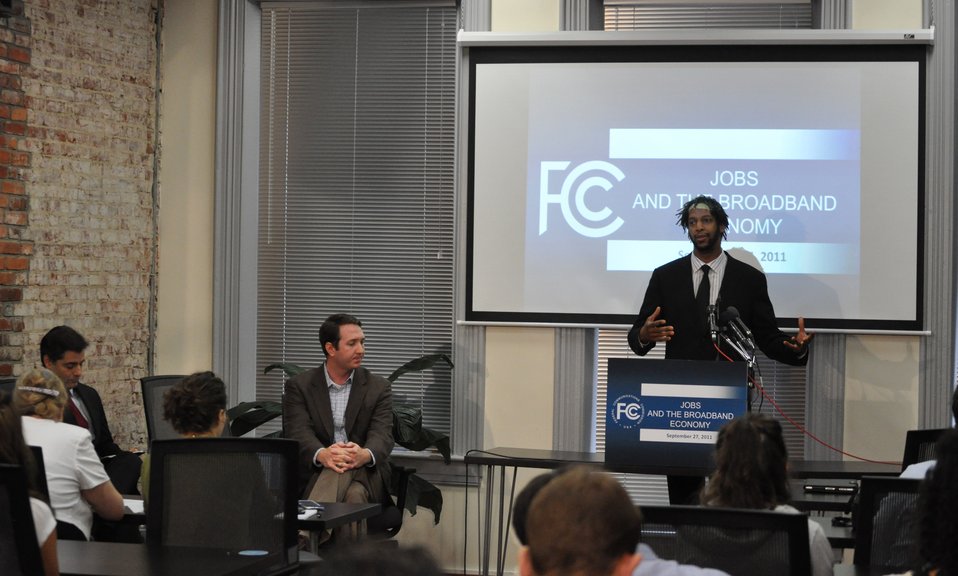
Jobs and the Broadband Economy

Warren Brown, Founder and Owner of CakeLove